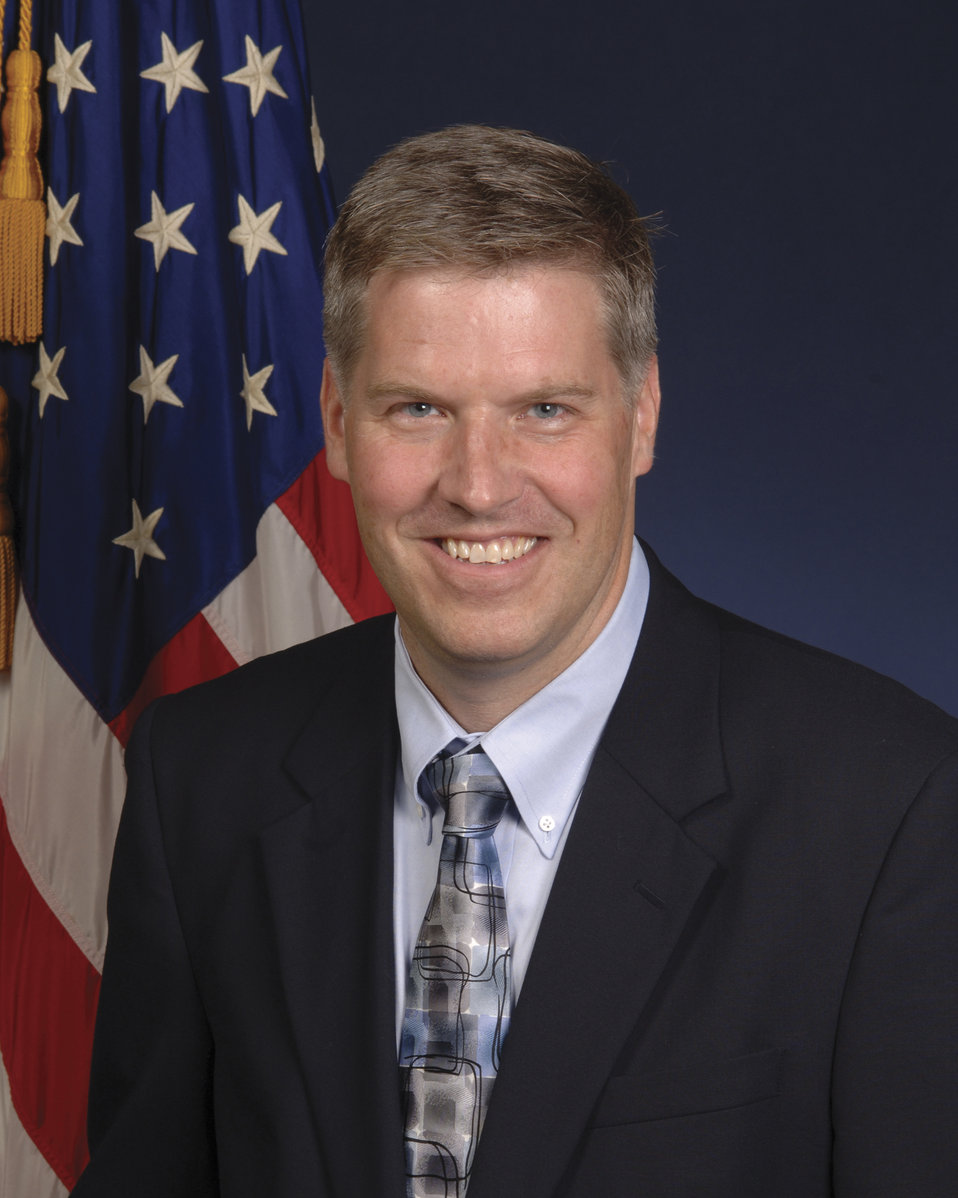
NIST Director Patrick Gallagher